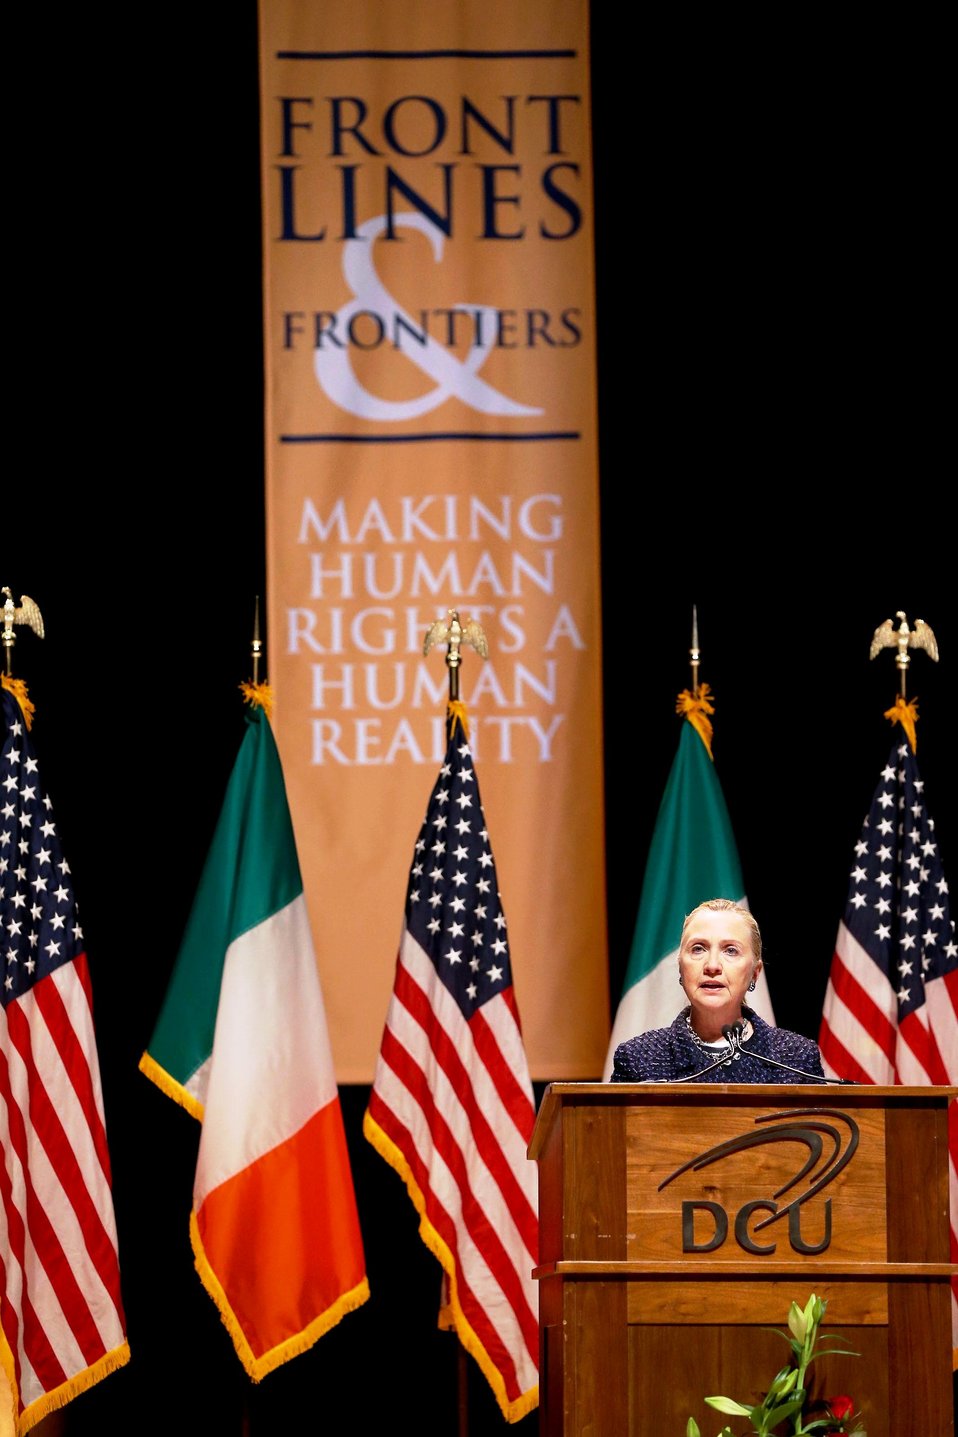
Secretary Clinton Delivers Remarks on Frontlines and Frontiers: Making Human Rights a Human Reality

U.S. Secretary of State Hillary Rodham Clinton delivers remarks on Frontlines and Frontiers: Making Human Rights a Human Reality at Dublin City University in Dublin, Ireland, December 6, 2012.